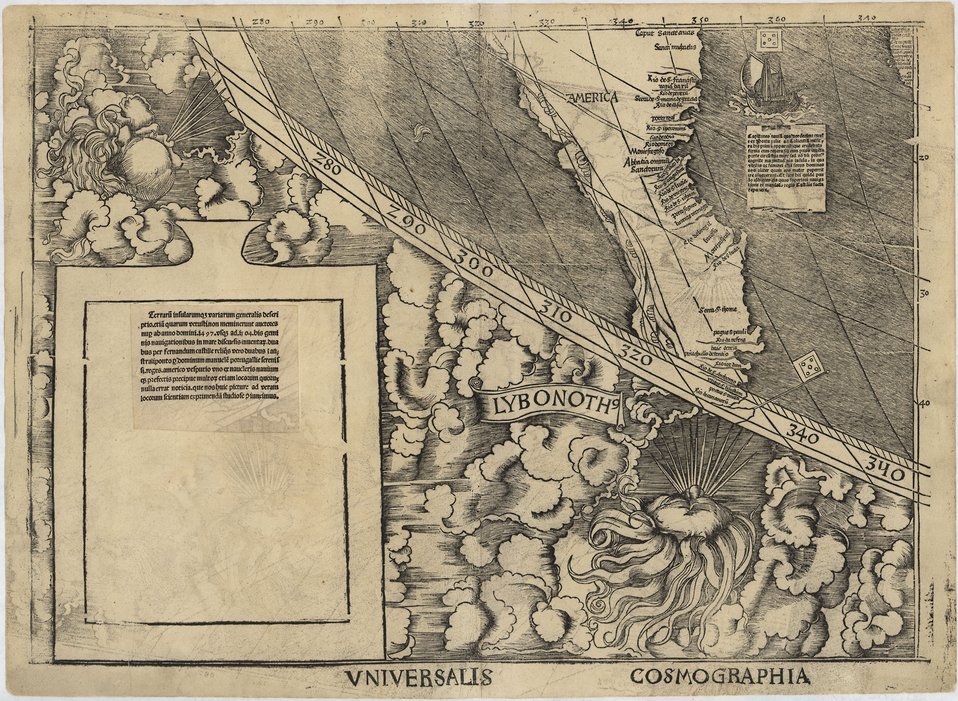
NIST To Preserve 1507 Map. America's 'Birth Certificate'

This sheet (bottom) from the lower left corner of the 12 that make up the Library of Congress Waldseemüller map marks the first time the word 'America' was used for the newly discovered lands. The full map also shows the outline of North and South America, as well as the Isthmus of Panama, and was the first to depict clearly a separate Western Hemisphere, with the Pacific as a separate ocean.